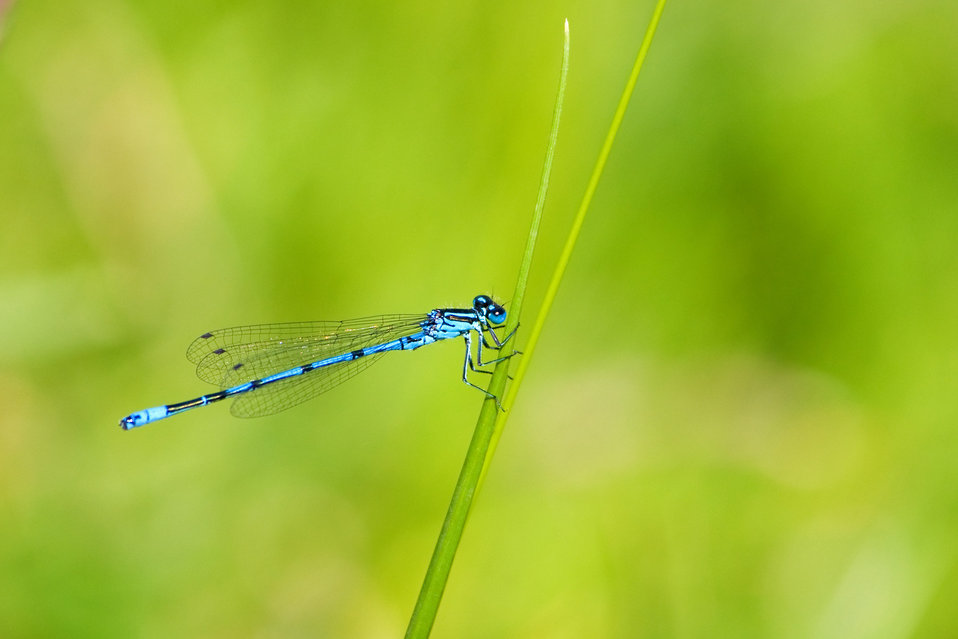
Blue dragonfly close-up

Close-up details of a blue dragonfly.